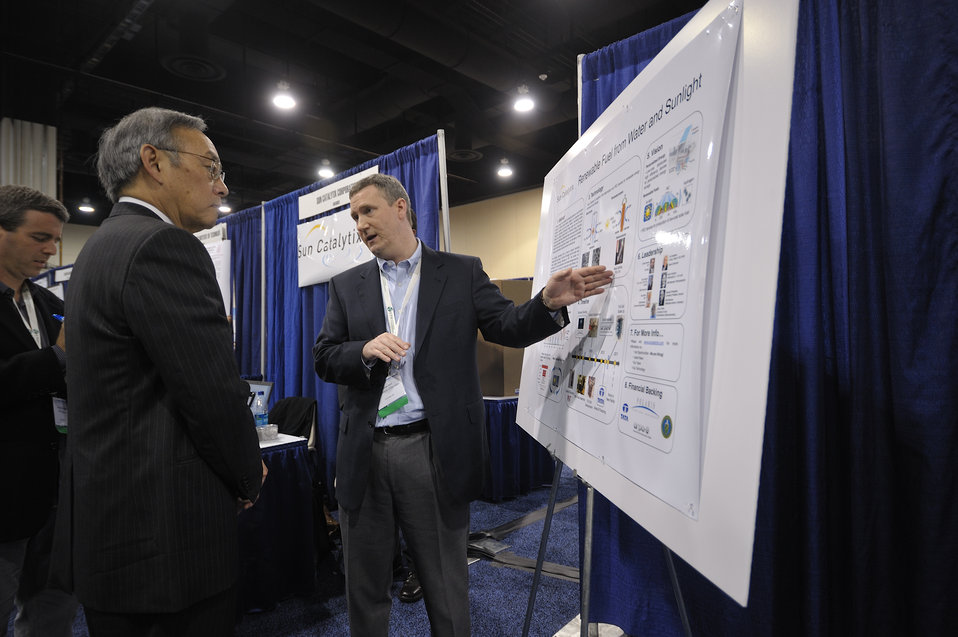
ARPA-E Energy Innovation Summit 2011, 57 of 83

Steven Chu, Secretary, United States Department of Energy speaks with Sun Catalytix at the summit's Technology Showcase.